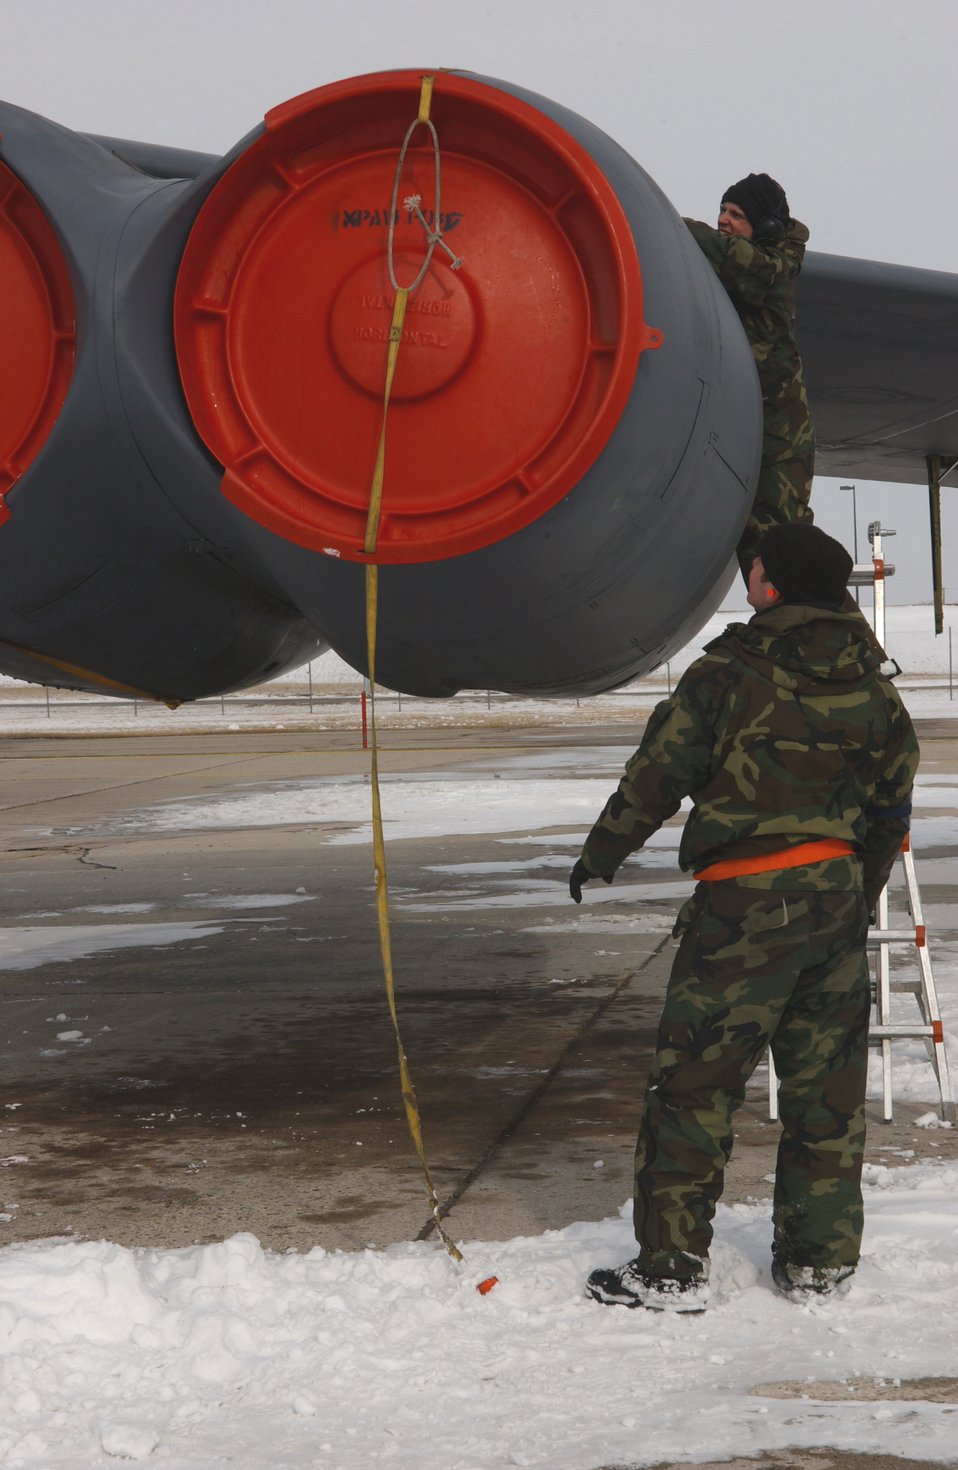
B-52 generation

Senior Airman Daniel Williams, top, and Airman 1st Class Michael Schaff secure a B-52H Stratofortress engine cover after an engine run during an alert generation exercise at Minot Air Force Base, N.D., Tuesday, Feb. 28, 2006. The exercise tested cruise missile loading and aircrew response procedures. Both Airmen are with the 5th Aircraft Maintenance Squadron.